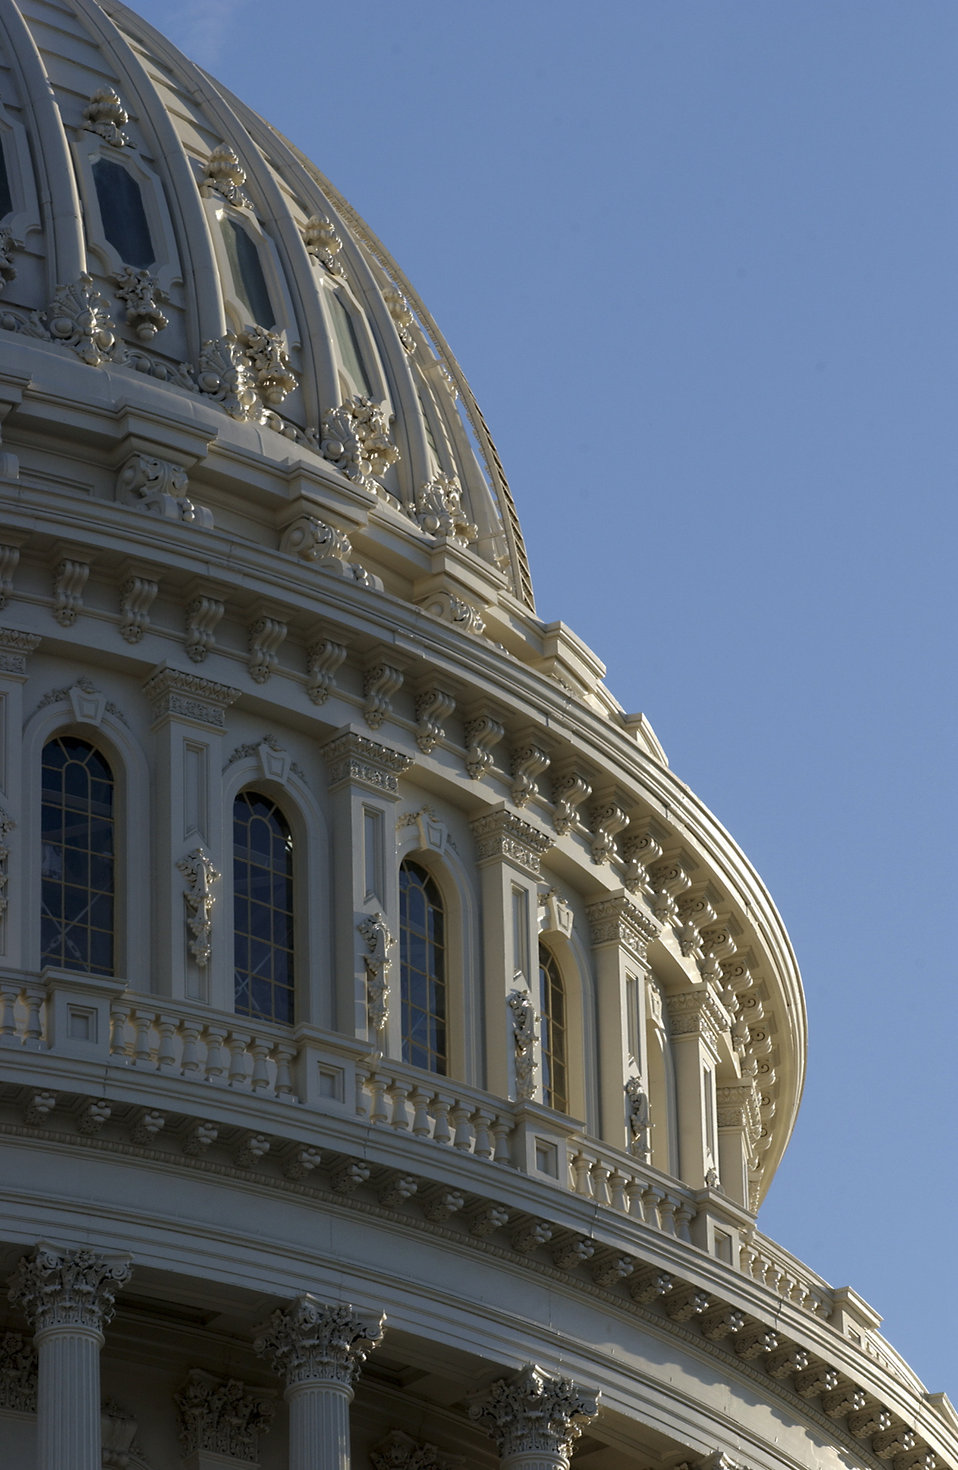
Close up view of the U.S. Capitol